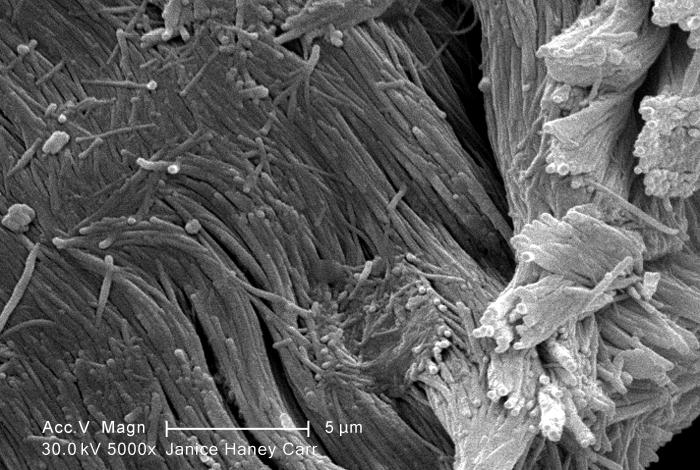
Under a high magnification of 5000X, this scanning electron micrograph (SEM) revealed some of the microcrystalline ultrastructure exhibited by a piece of raw chrysotile, or white asbestos, which had been excavated from the Lowell Asbestos Mine on Belvidere Mountain, Vermont.